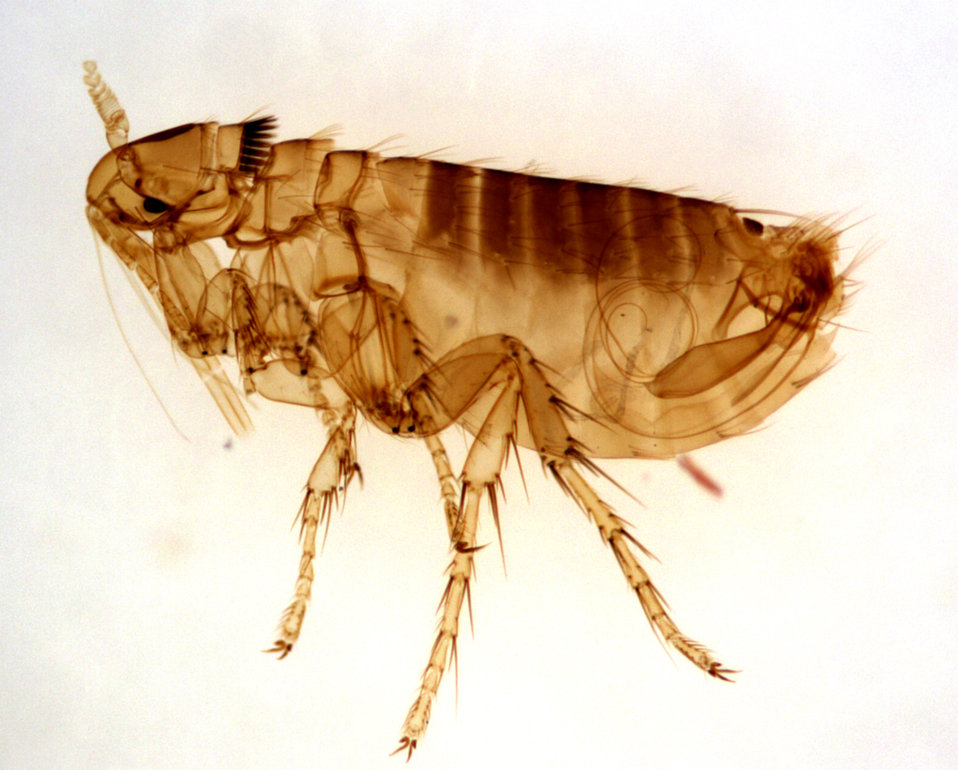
This photograph depicts an adult male Oropsylla Montana flea, formerly known as Diamanus Montana.